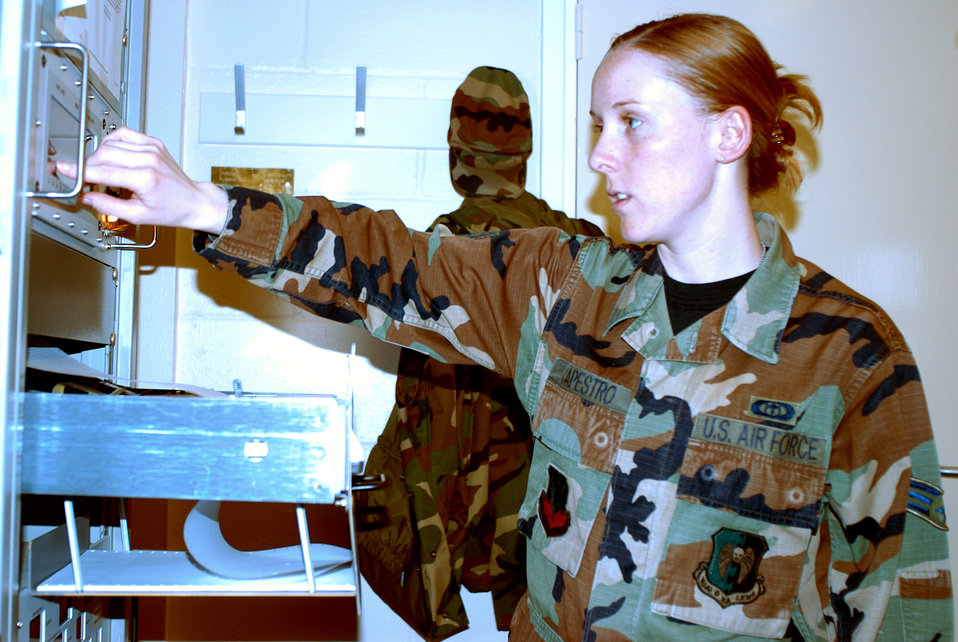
Capestro

OPERATION IRAQI FREEDOM -- Senior Airman Mellissa Capestro checks cloud height and barometric pressure at a forward-deployed location. She is a weather forecaster with the 457th Air Expeditionary Group.